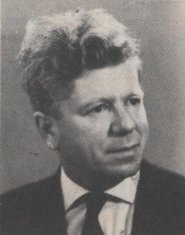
עברית: תמונת פספורט